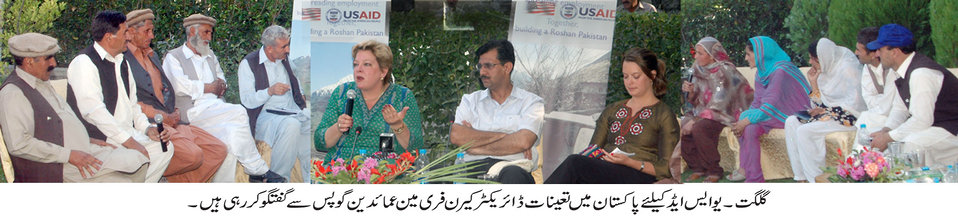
Deputy Director Karen Freeman’s visit to Gilgit Library

Karen Freeman visited the Municipal Gilgit Library on Monday, July 9. She was accompanied by other USAID staff and the staff from the Ambassador’s Fund Program. A the library, she met with Deputy Commissioner of Gilgit, Mr. Arqam and library staff, toured a photo display, and had an informal discussion with the library staff and community members about the USAID-funded project. Library staff showed the equipment funded by USAID (computers, internet, scanners, etc). The visit concluded by a Q & A session with media.